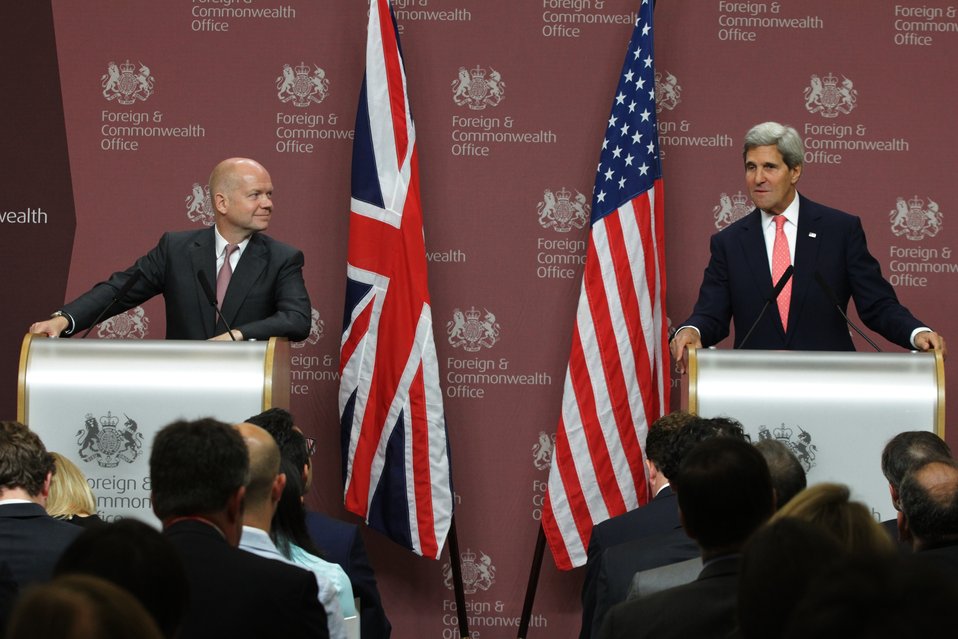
Secretary Kerry Delivers Remarks With British Foreign Secretary Hague

U.S. Secretary of State John Kerry delivers remarks with British Foreign Secretary William Hague during a news conference in London, United Kingdom on September 9, 2013.